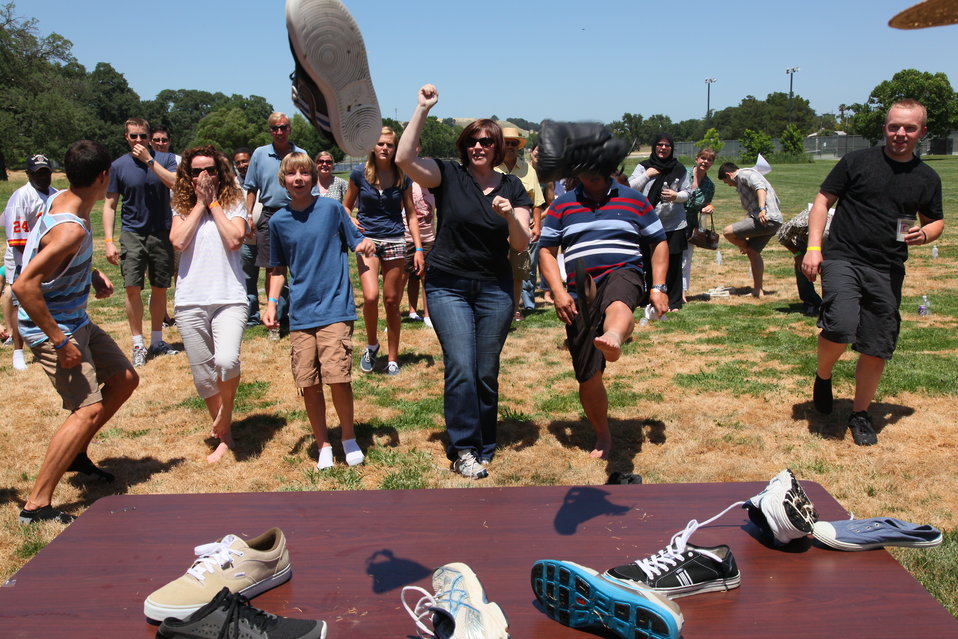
2011 Annual Picnic